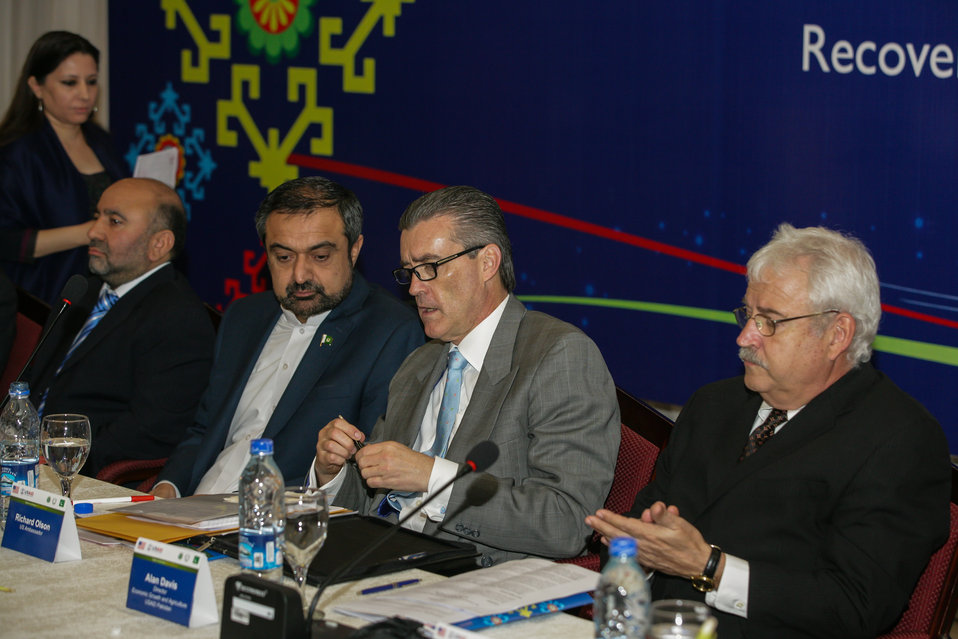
Graduation event of USAID Firms Project's Malakand Small and Medium Enterprises (SME) Recovery Assistance Program

State level dignitaries attended the event to pledge their support and commitment to the economic recovery and development of Swat.